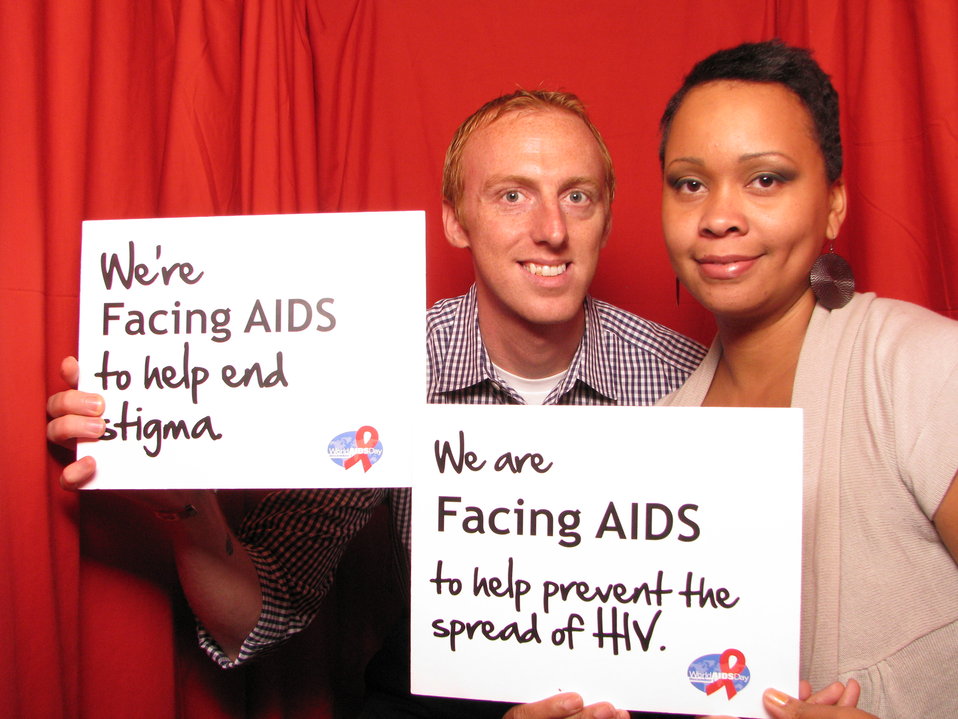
We're FACING AIDS to help end stigma. We are FACING AIDS to help prevent the spread of HIV.

From the AIDS.gov photo booth at the U.S. Conference on AIDS, September 2010 (Orlando, FL).